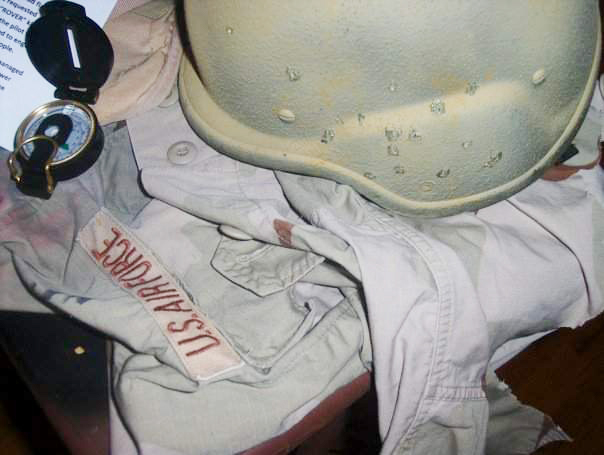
Air Force officials remain vigilant in PTSD treatment

Lt. Col. Greg Harbin's helmet and uniform after the rocket-propelled grenade attack in Afghanistan.